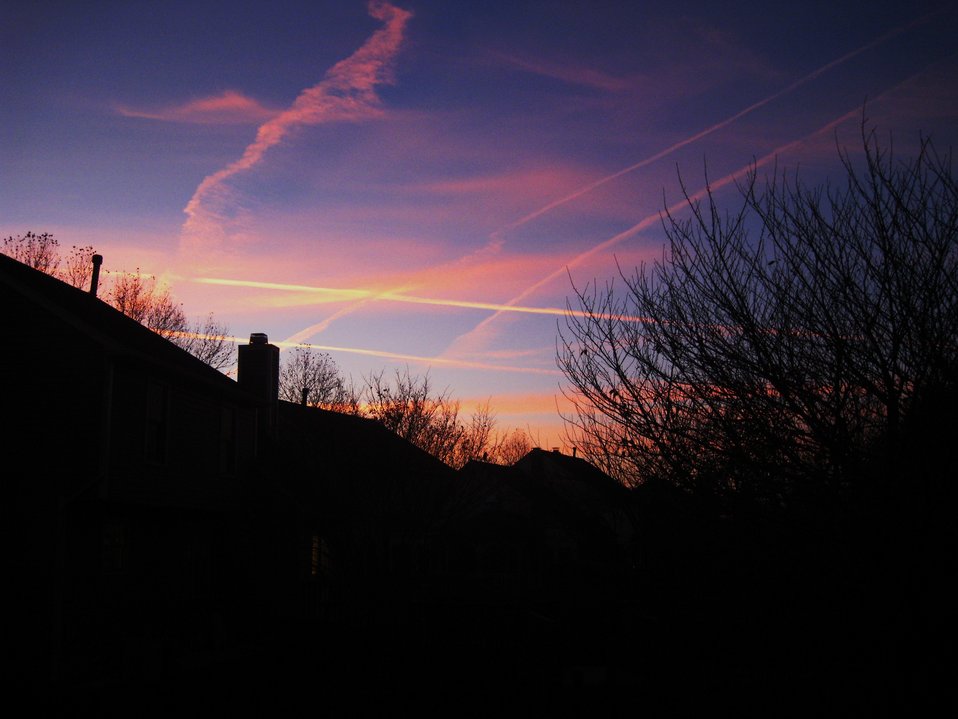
Criss-crossing jet contrails make a rhomboidal pattern at sunset.